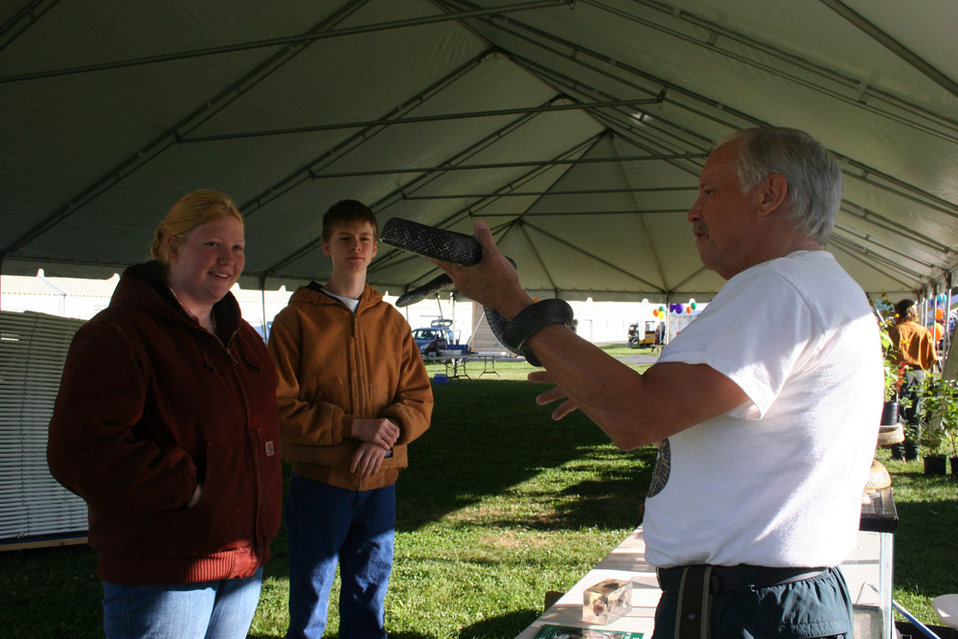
Freshwater Folk Festival (5)